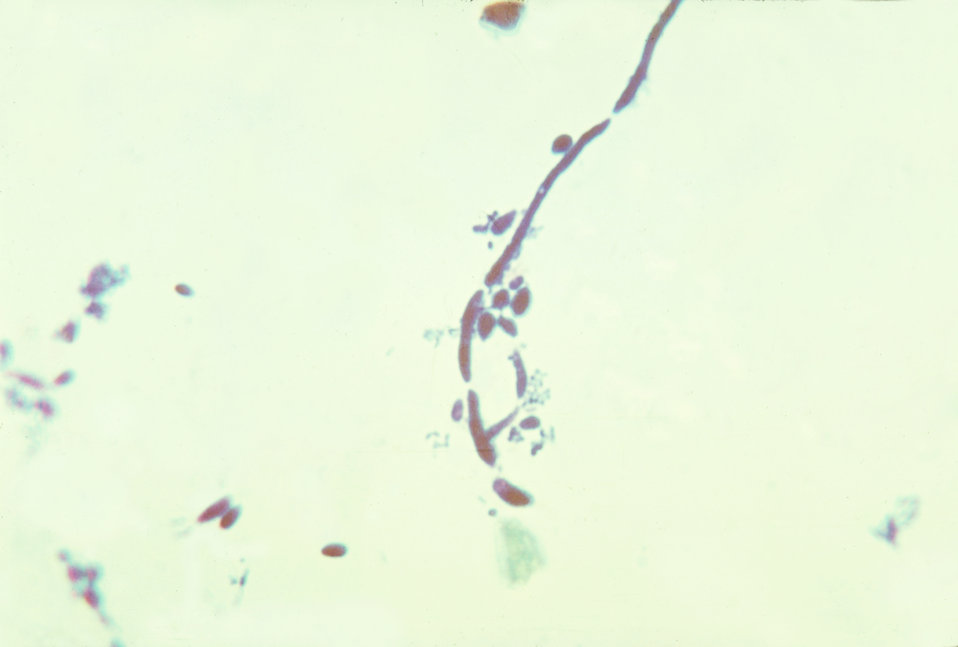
This is a photomicrograph of the fungus Candida albicans in a sputum sample.